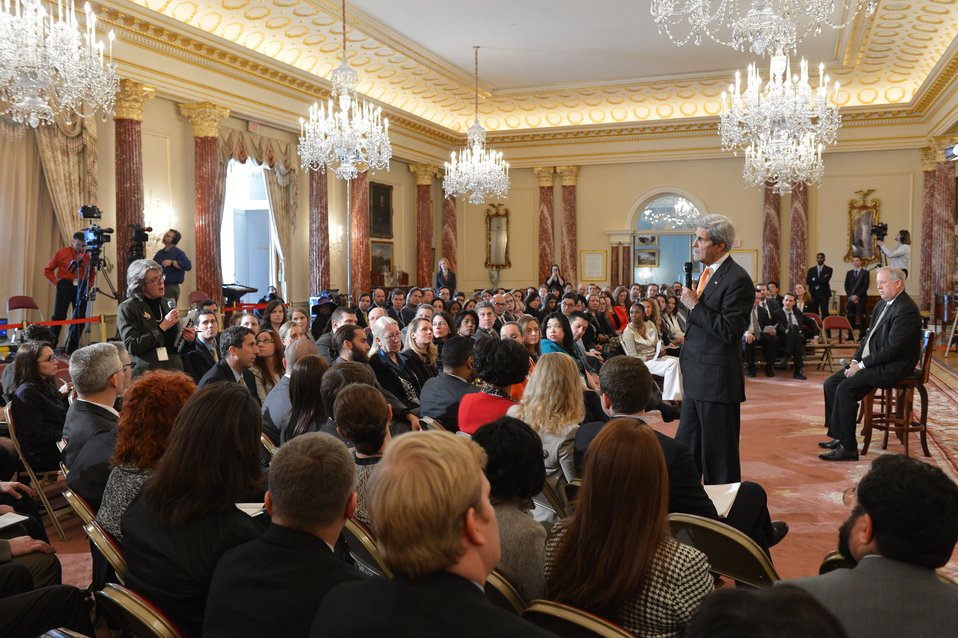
Secretary Kerry Listens to a Question From a State Department Employee

U.S. Secretary of State John Kerry holds a conversation with employees at the U.S. Department of State in Washington, D.C., on January 29, 2014.